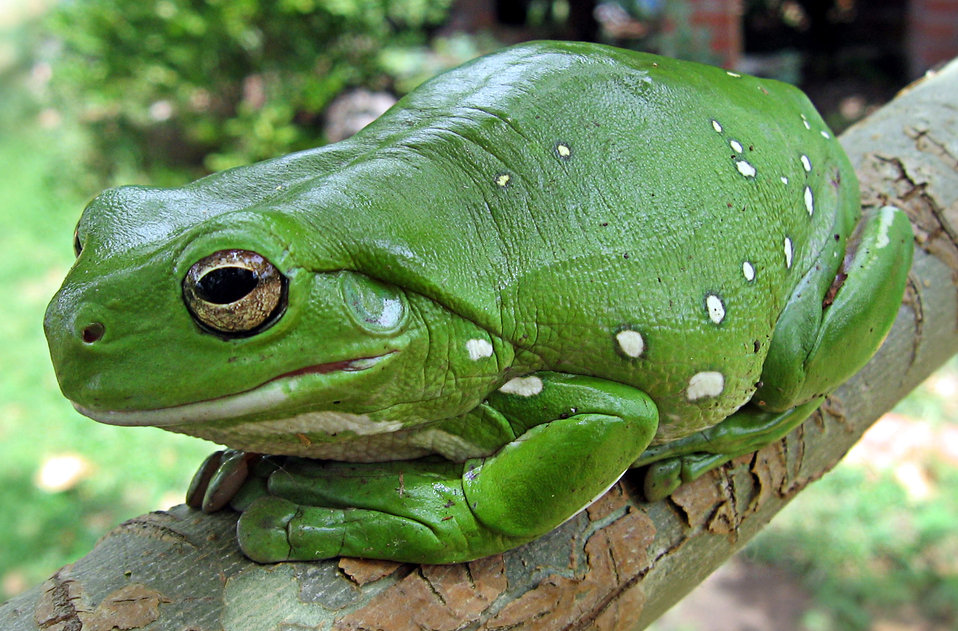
Caerulea3 crop